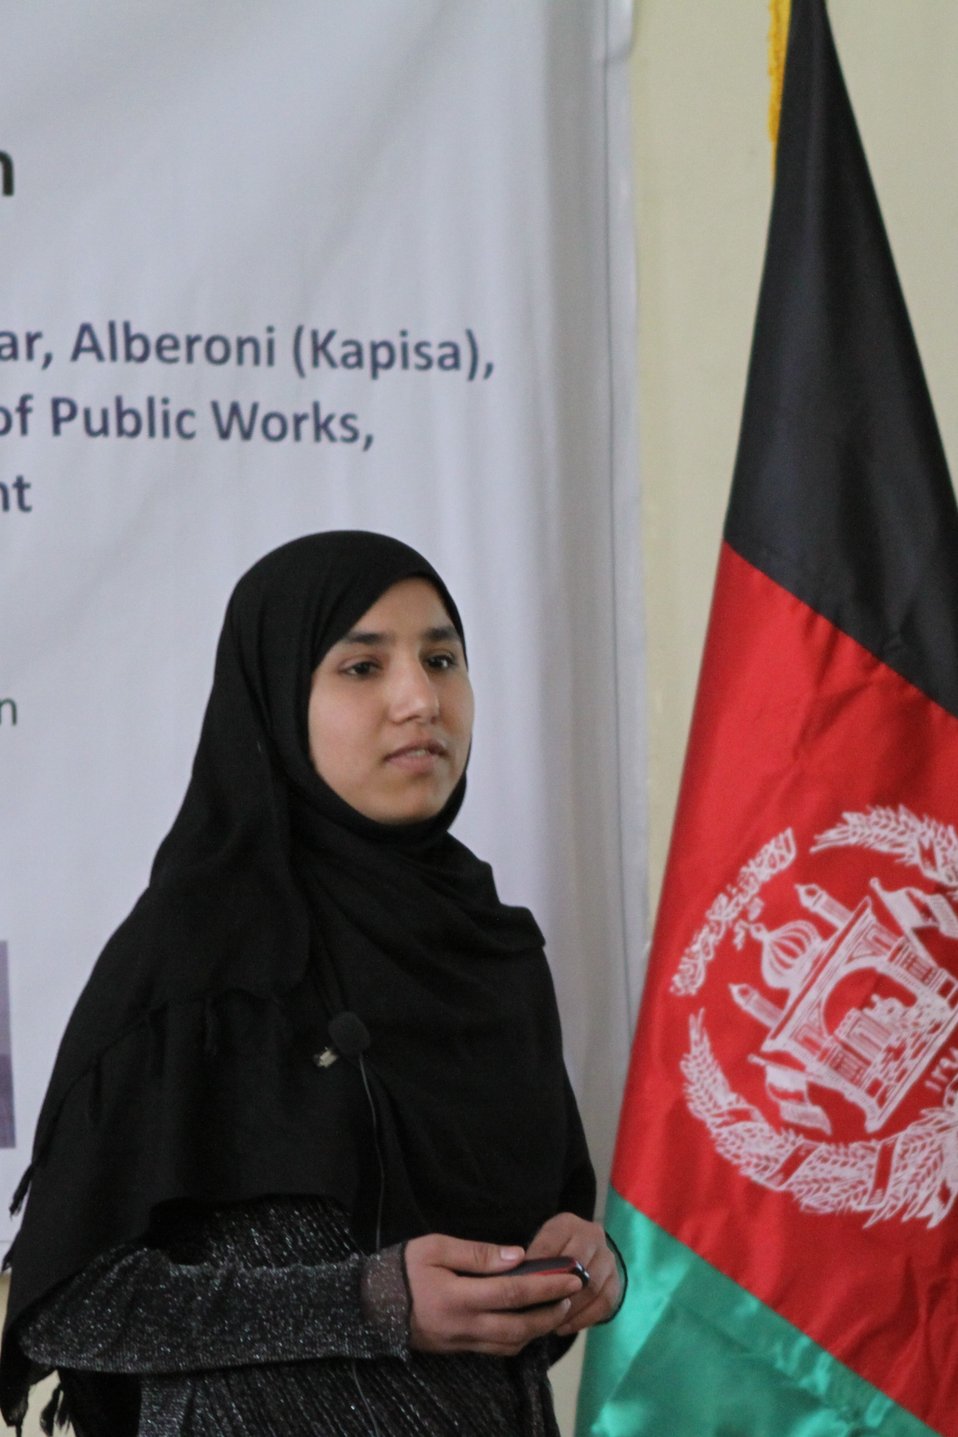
Female University Students Complete Internship

Kabul, Afghanistan | March 16, 2011 – In response to a demand for qualified Afghan engineers, Kabul University celebrated completion of an intensive five-month Mentor Protégé Training Program today by 10 female fourth year university students. The Training Program is a joint effort between the Government of the Islamic Republic of Afghanistan, the U.S. Agency for International Development (USAID), and the Universities of Kabul, Kandahar, Alberoony in Kapisa, Shiekh Zayed in Khost. The graduation ceremony highlighted collaboration with these national institutions in building the technical skills of young Afghans, made possible by USAID.

Four of the interns are engineers, while the remaining six are from the faculties of computer science, economics, and psychology.

Speaking about the event, H.E. Minister of Public Works Abdul Qudus Hamidi said, “The future of Afghanistan lies in developing the skills of our youth, and the engineering skills of these graduates today represent a small but important step forward for the country.”

Keynote speakers at the ceremony included H.E. Deputy Minister of Higher Education Abdul Rahim; USAID Senior Deputy Mission Director Robert Hellyer; and Chancellor of Kabul University Professor Hamidullah Amin. Approximately 150 people, including current and former students attended the graduation.

Launched last year, the Mentor Protégé Training Program has provided qualifying students the opportunity to intern with USAID’s Strategic Provincial Roads-South and East Afghanistan project and gain practical experience in a real work environment. The goal of the program was to offer interns the opportunity to gain hands-on experience to reinforce their formal studies. A total of 30 students from four national universities have benefitted from this program.

“The promotion of women’s rights is integrated into the overall U.S. Government development strategy and can be found in key programs, including education, healthcare, security, rule of law, political participation, agriculture, and economic development,” said Robert Hellyer. “The U.S. Government is committed to the Afghan leadership of programs that directly enhance development, particularly as it relates to women’s issues.”

This event also highlighted the learning achievements of students and emphasized the importance of hands-on internship programs. The curriculum is designed to instill students with the knowledge and confidence to qualify for engineering positions upon completion of their fourth year at their respective universities.